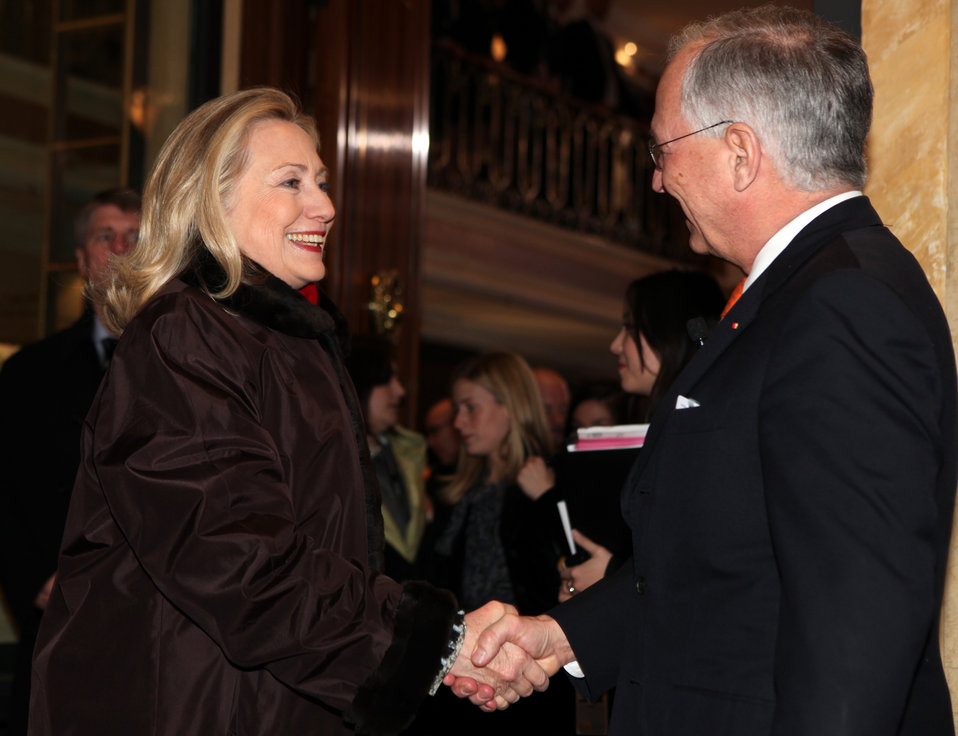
Secretary Clinton Is Welcomed By Chairman Ischinger

U.S. Secretary of State Hillary Rodham Clinton is welcomed to the Munich Security Conference by Wolfgang Ischinger, Chairman of the Conference, at the Bayerischer Hof in Munich, Germany, on February 4, 2012.